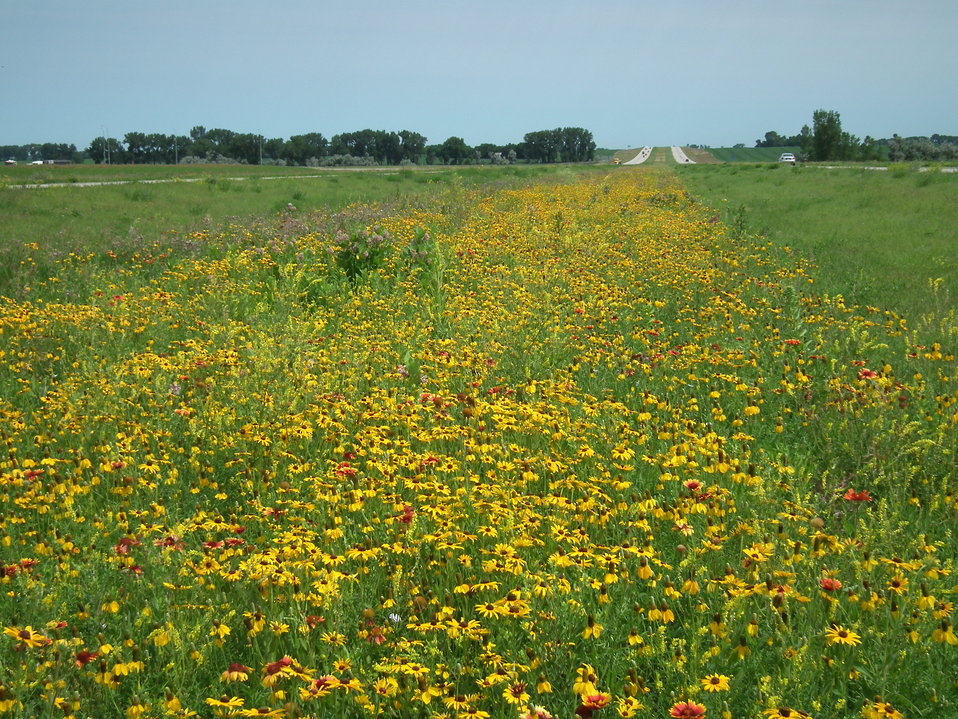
I-29 planting SD (2)

The U.S. Department of Agriculture (USDA) Natural Resources Conservation Service (NRCS) in South Dakota office planted a seed mix that included nine native wildflowers and three native prairie grasses along the Interstate 29 median that borders North Dakota. The planting extends for 2 miles, and provides habitat for native pollinators, as well as cover for ground-nesting birds.